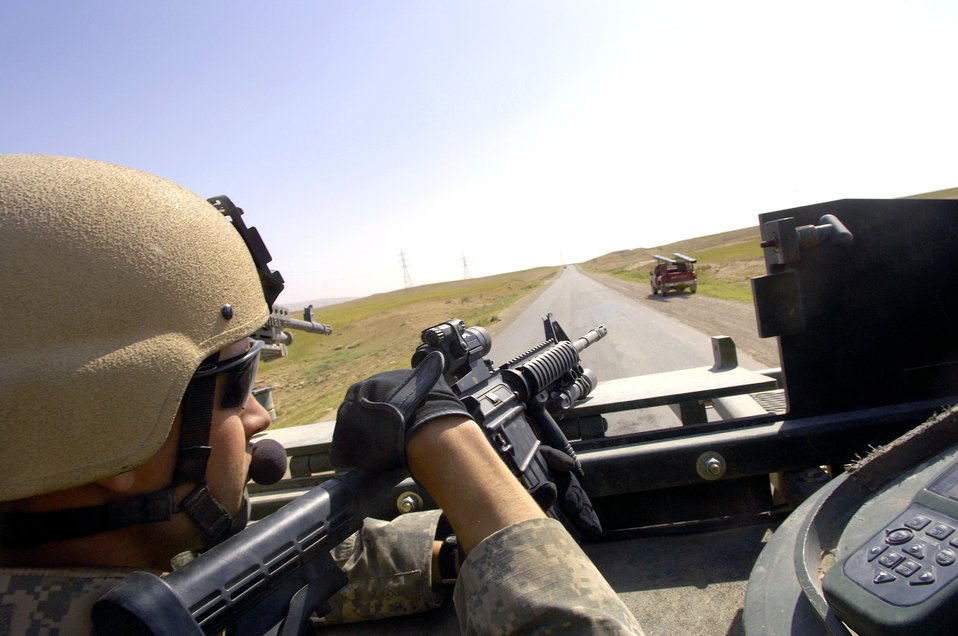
Stryker brigade combat team on patrol

Staff Sgt. Chris Pierce provides rear security in a Stryker vehicle while on patrol near Sinjar, Iraq on May 14, 2006. Sergeant Pierce is a joint tactical air controller assigned to a U.S. Army Stryker brigade combat team.